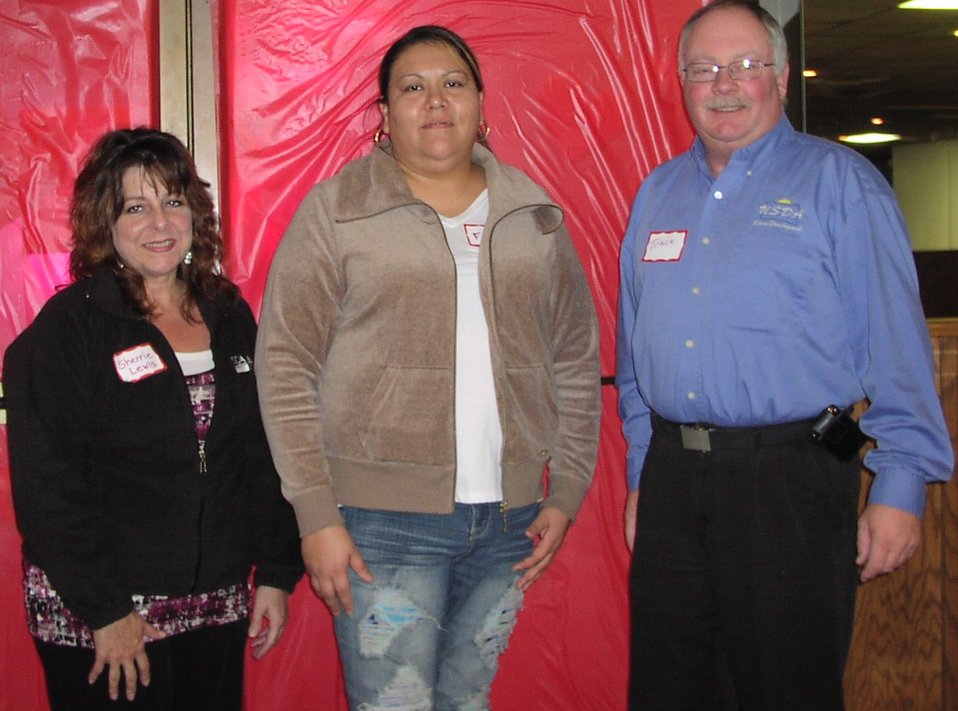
entrepreneur conference 02012013

Attendees at the South Dakota Tribal Entrepreneurship Fair: left to right, U.S. Department of Agriculture (USDA), Rural Development (RD) Specialist Sherrie Lewis, Flo Hare - EDA Director for Yankton Sioux Tribe, and Rural Development Area Director Trace Davids.